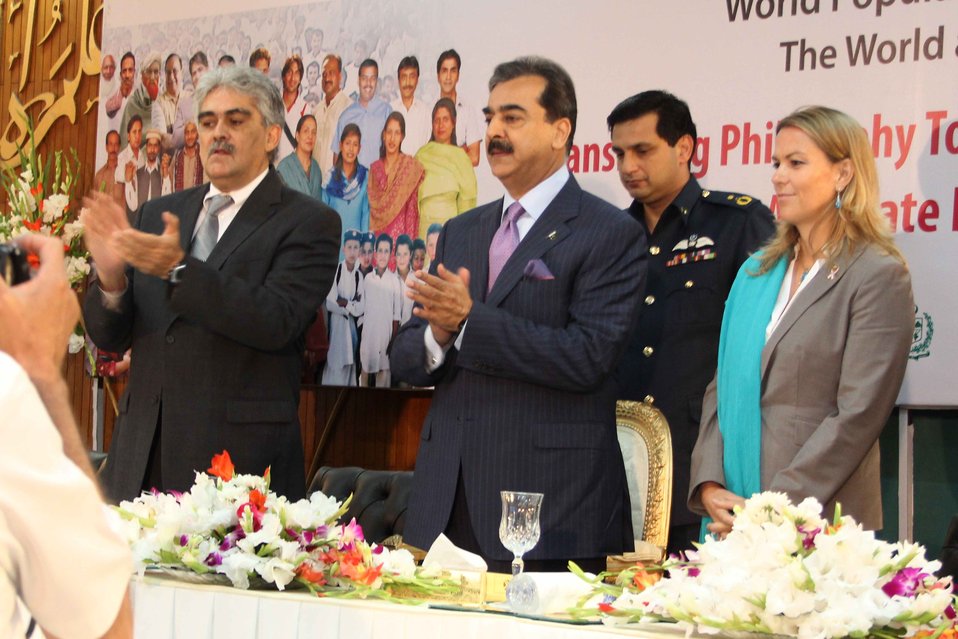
USAID Senior Health Officer Shanda Steimer with Prime Minister Gilani and Planning Commission Deputy Chairman Dr. Nadeem Ul Haque

The U.S. Agency for International Development (USAID) representatives joined Pakistan’s Prime Minister Yousaf Raza Gilani on World Population Day to launch a system that will improve the availability of contraceptives in the public health system.